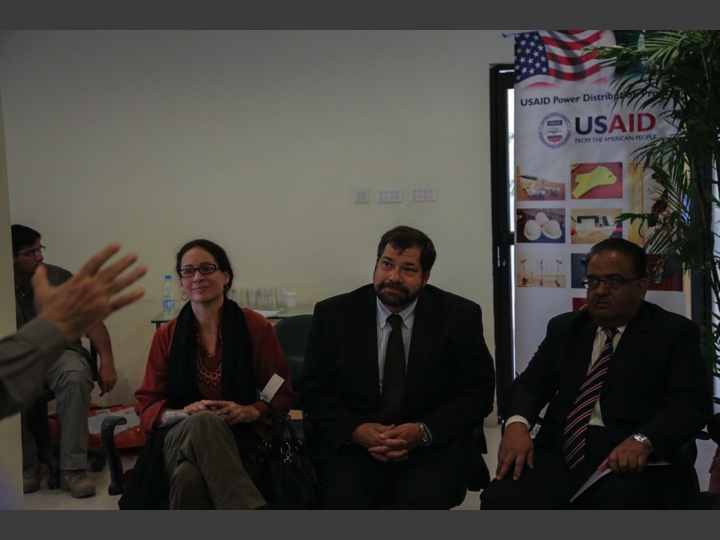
Ms.Melissa Knight (Director Energy Office USAID Pakistan) Mr. Jeffrey Bakken (Provincial Director USAID Punjab) Mr. Ehsan Elahi (GM LESCO)